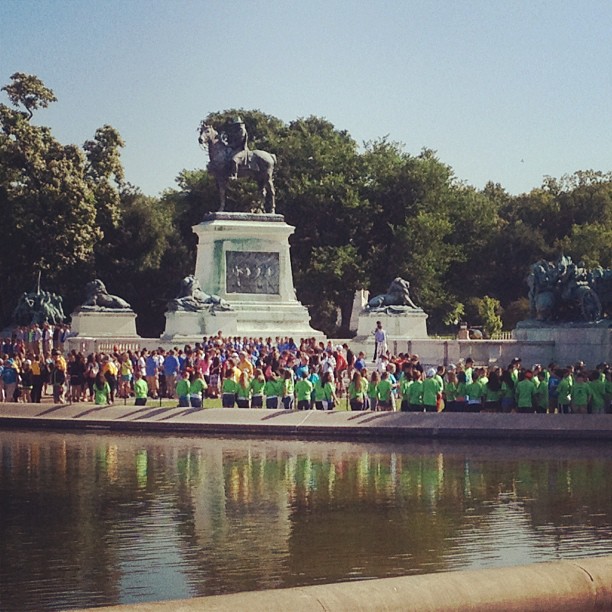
Picture perfect morning at Grant Memorial @uscapitol.